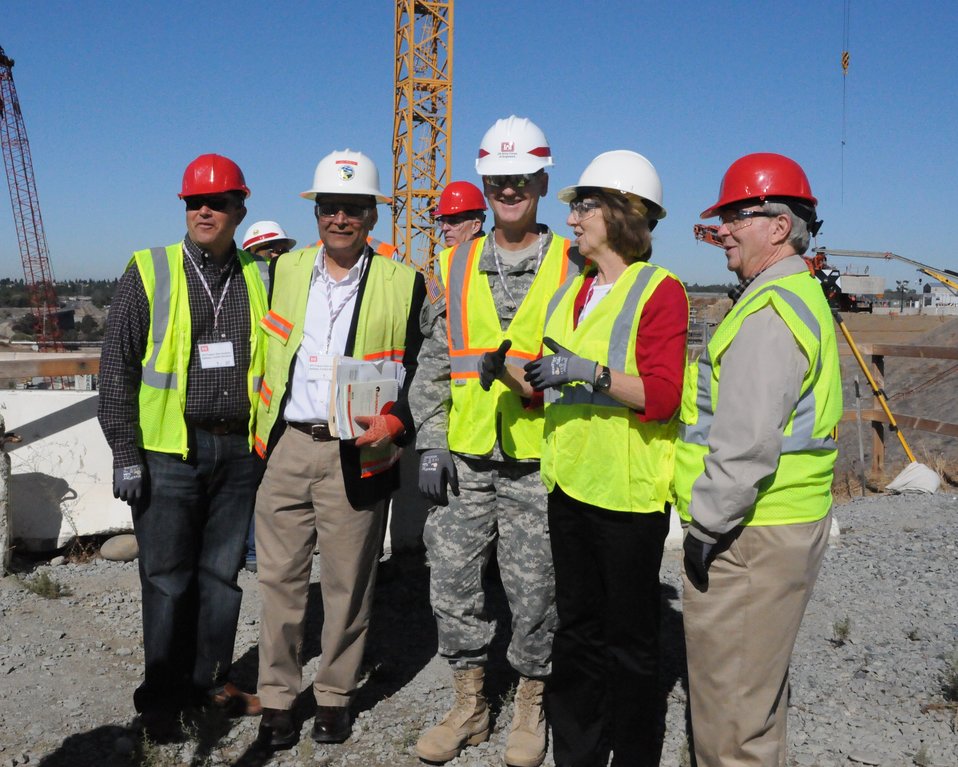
Central Valley Flood Protection Board visits new Folsom Dam spillway

Central Valley Flood Protection Board members tour the Folsom Dam auxiliary spillway in Folsom, Calif., with U.S. Army Corps of Engineers staff and other federal and state partners Sept. 27, 2013. From left: Michael Villines, CVFPB board member; Jay Punia, CVFPB executive officer; Col. Michael Farrell, Sacramento District commander; Jane Dolan, CVFPB secretary; and William Edgar, CVFPB president.